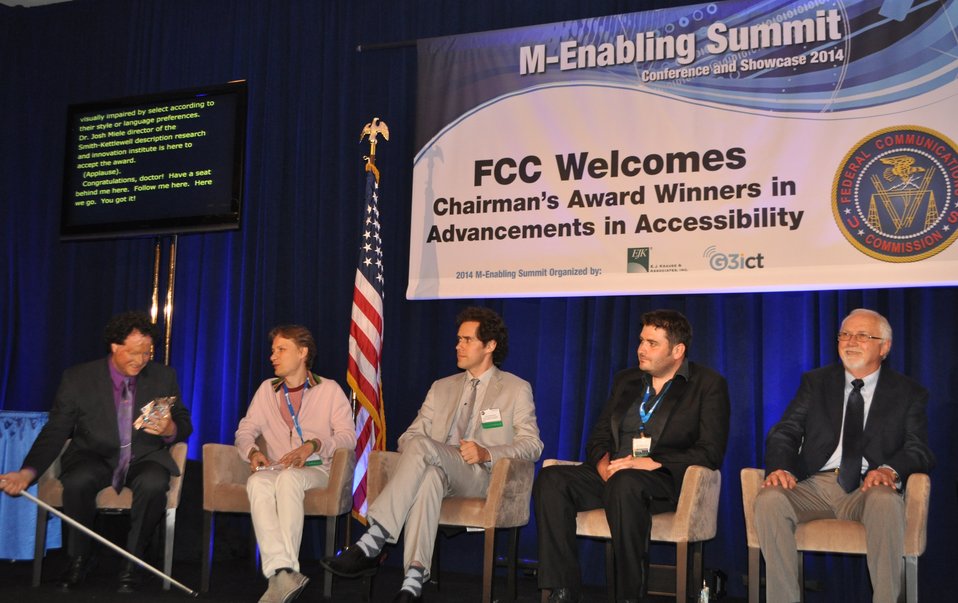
6.9.2014 Third Annual Chairman’s Awards for Advancement in Accessibility

Chairman AAA Recipients